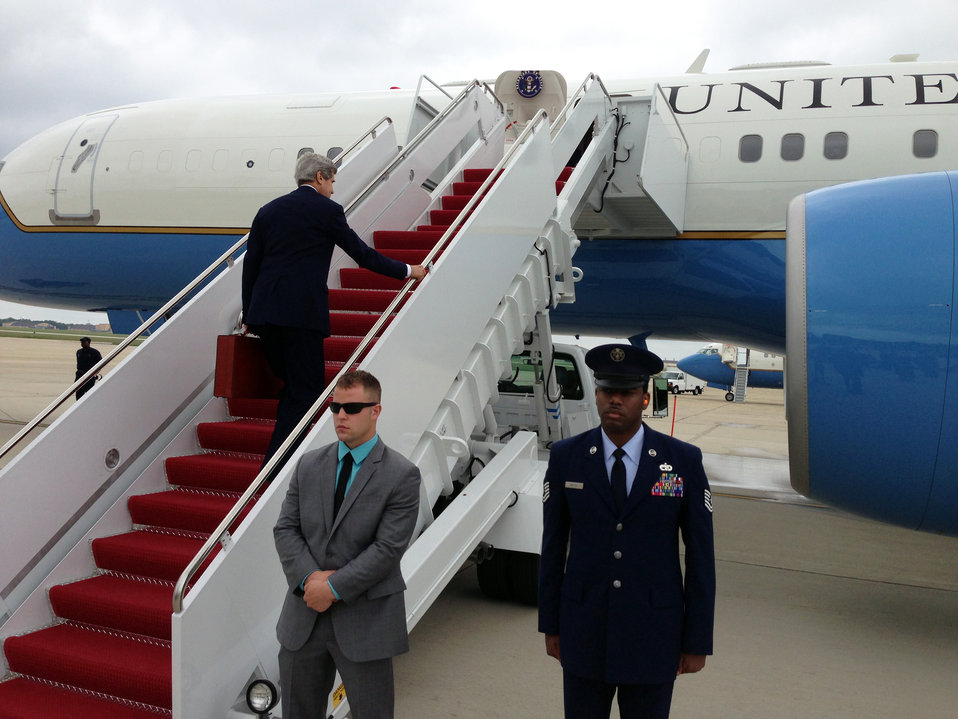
Secretary Kerry Boards the Plane En Route to Oman

U.S. Secretary of State John Kerry boards his plane at Andrews Air Force Base, Maryland, en route to Oman on May 20, 2013.